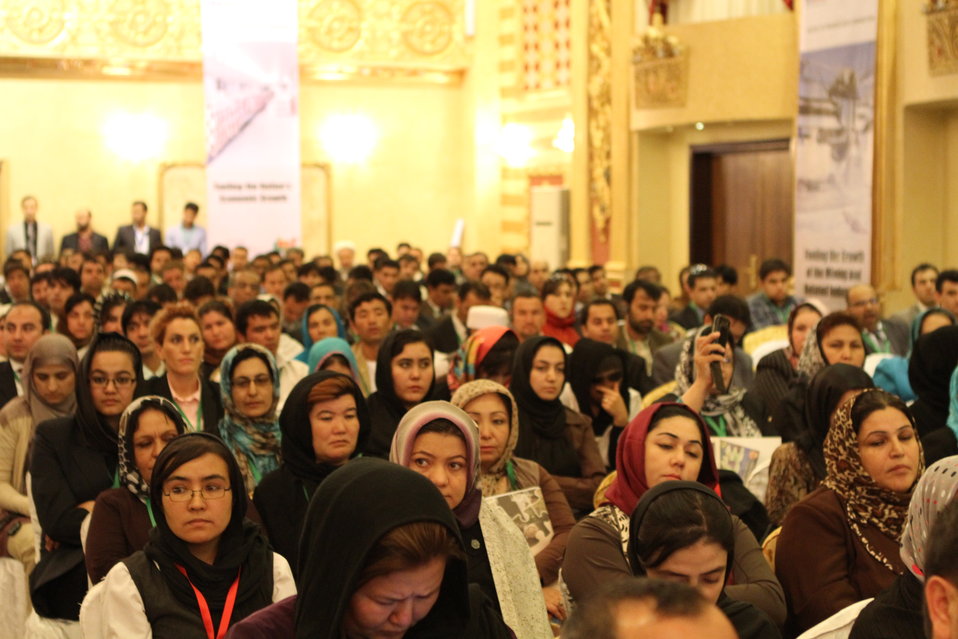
A2F Exhibition